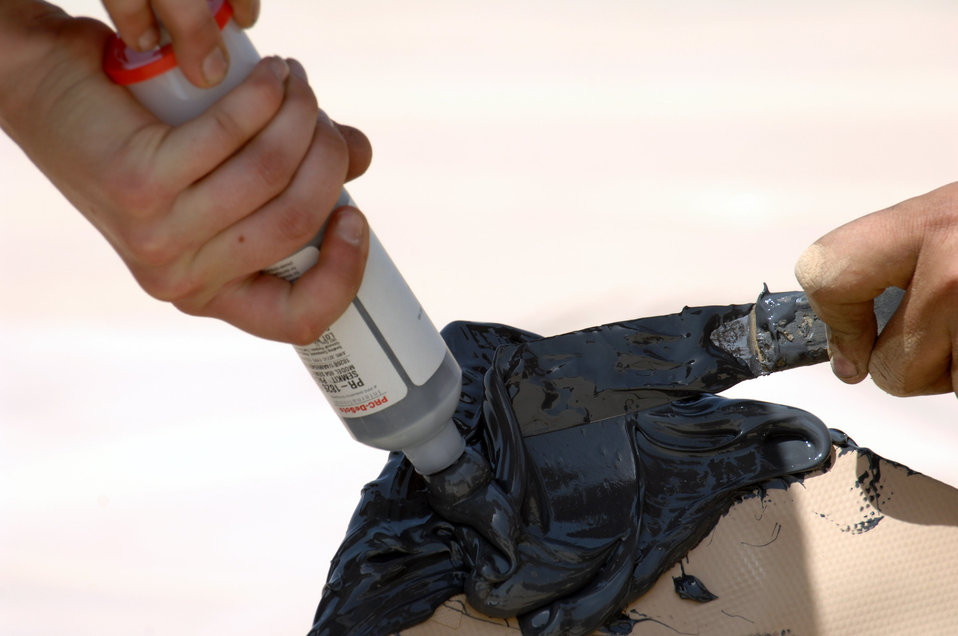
Kirkuk Airmen upgrade fuel storage

The corner of a new fuel bladder is sealed during installation June 19 at Kirkuk Regional Air Base, Iraq. The bladder will be filled with JP-8 jet fuel. Fuel storage bladders are collapsible, flexible storage containers that provide temporary as well as long term fuel storage.